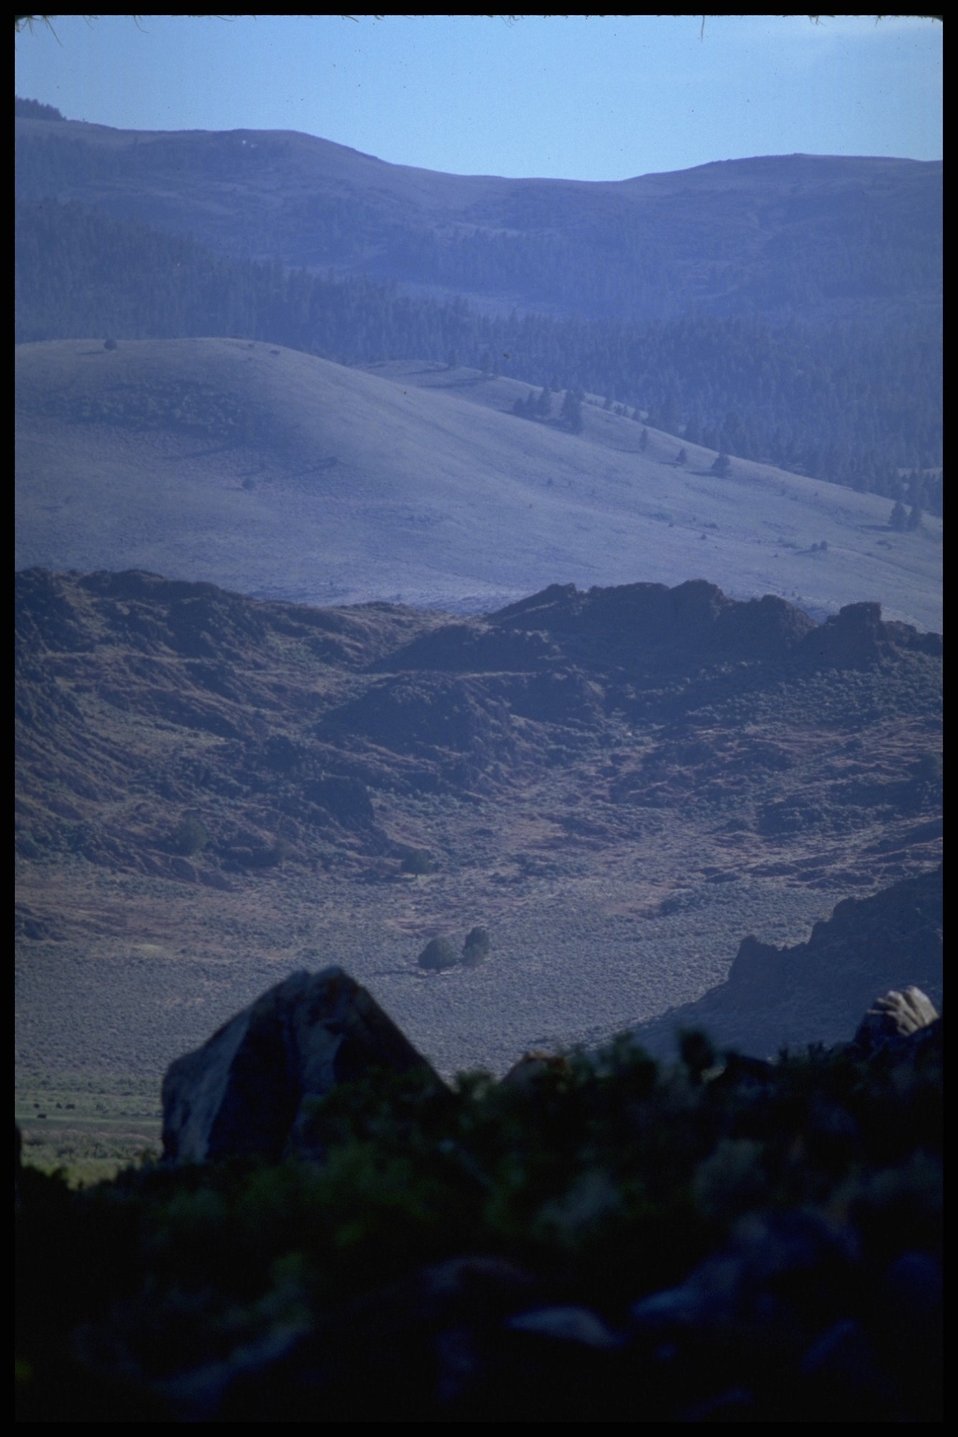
Scenic view of Golden Eagle area, Lakeview District.